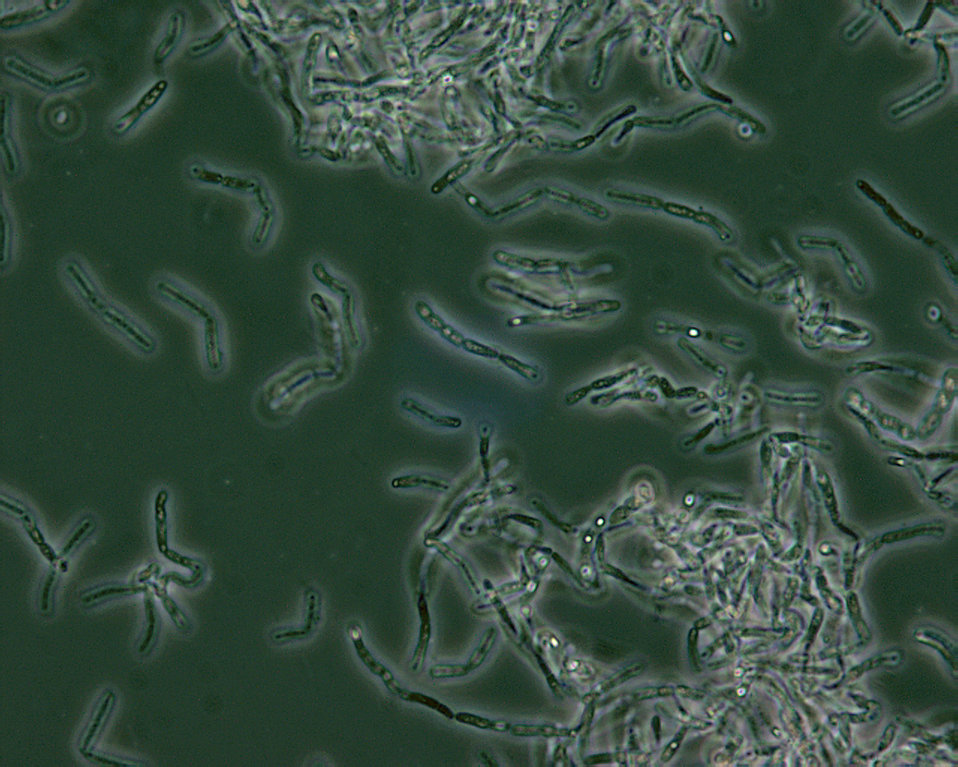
Bacillus anthracis spores seen under phase contrast microscopy.